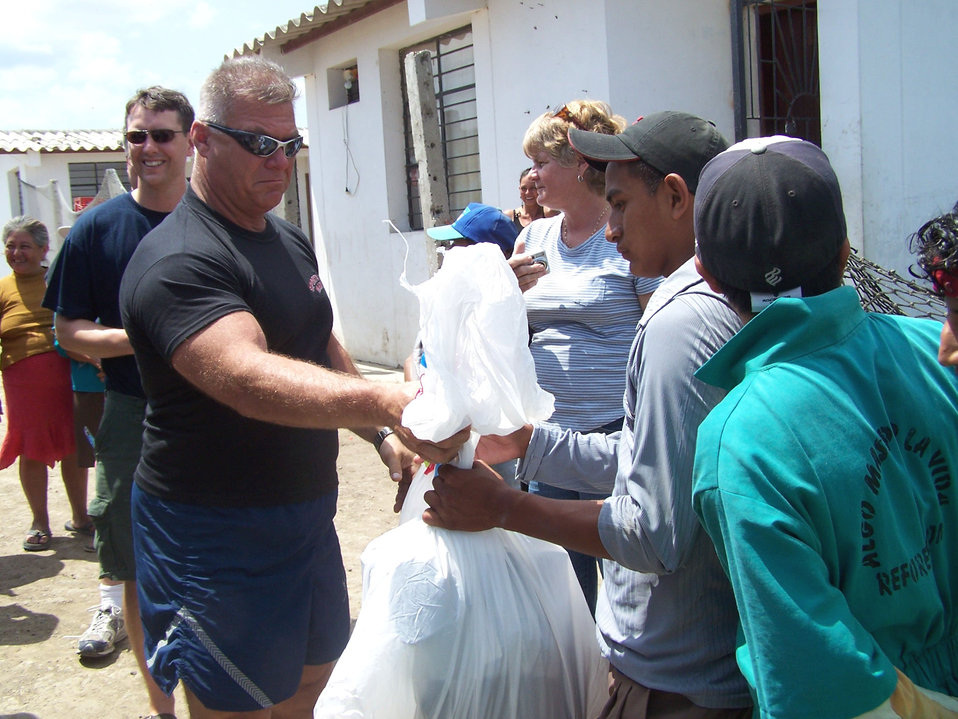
Airmen collect items for Manta community

Chief Master Sgt. Bruce Nicholson hands out compassion packages to residents of the Manta City Dump in Ecuador. He is assigned to the Air National Guard's 157th Air Refueling Wing at Pease, N.H.